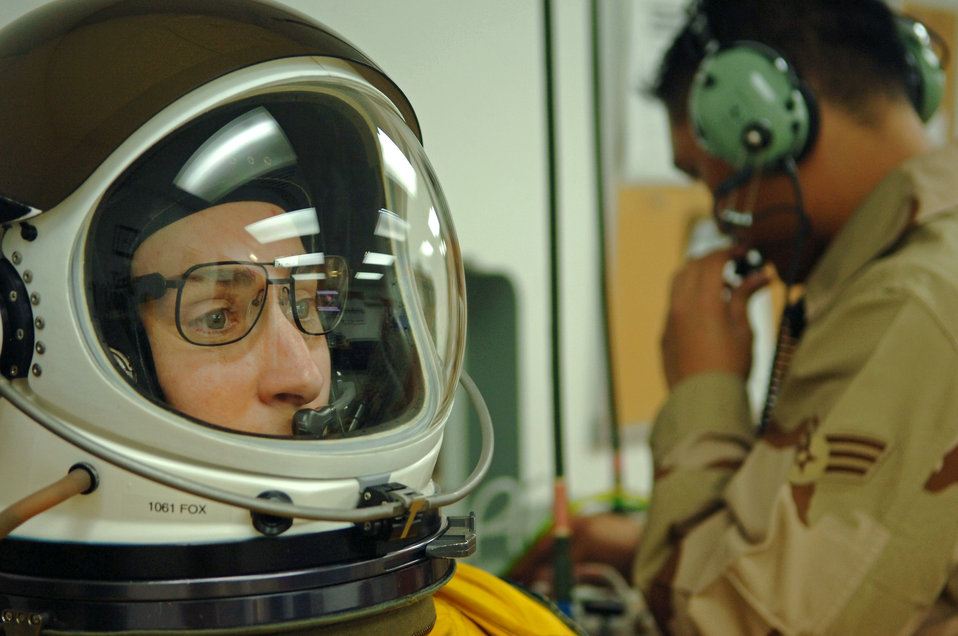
Female U-2 pilots bringing ISR to commanders below

Capt. Heather Fox, a U-2 Dragon Lady pilot with the 99th Expeditionary Reconnaissance Squadron, receives 100 percent oxygen while Senior Airman Roric Ongaco, a 99th ERS physiological support division technician, monitors Captain Fox's suit pressure. She was preparing to fly a reconnaissance mission March 25 from an air base in Southwest Asia. Captain Fox is one of only three female U-2 pilots currently serving in the Air Force.